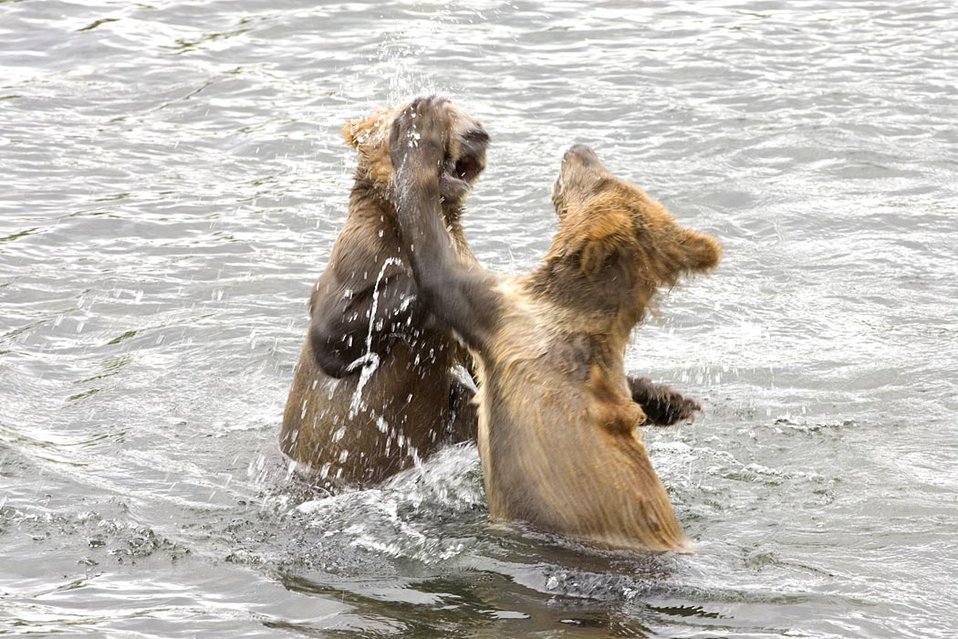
Brown bear cubs playing in water

This image taken at the Frazer Lake weir. Frazer Lake weir consists of a series of